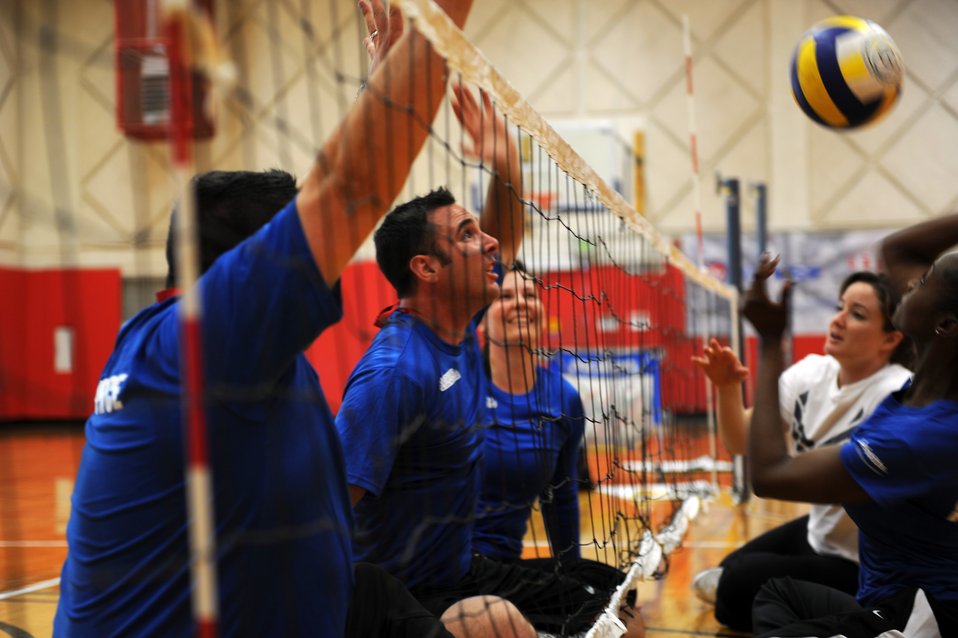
Warrior Games AF Volleyball Practice

Air Force members practice volleyball at the Warrior Games May 10, 2010 at the Olympic Training Center, Colorado Springs. The Warrior Games competition began May 10 and finishes on May 14, 2010 at the U.S. Olympic Training Center in Colorado Springs.